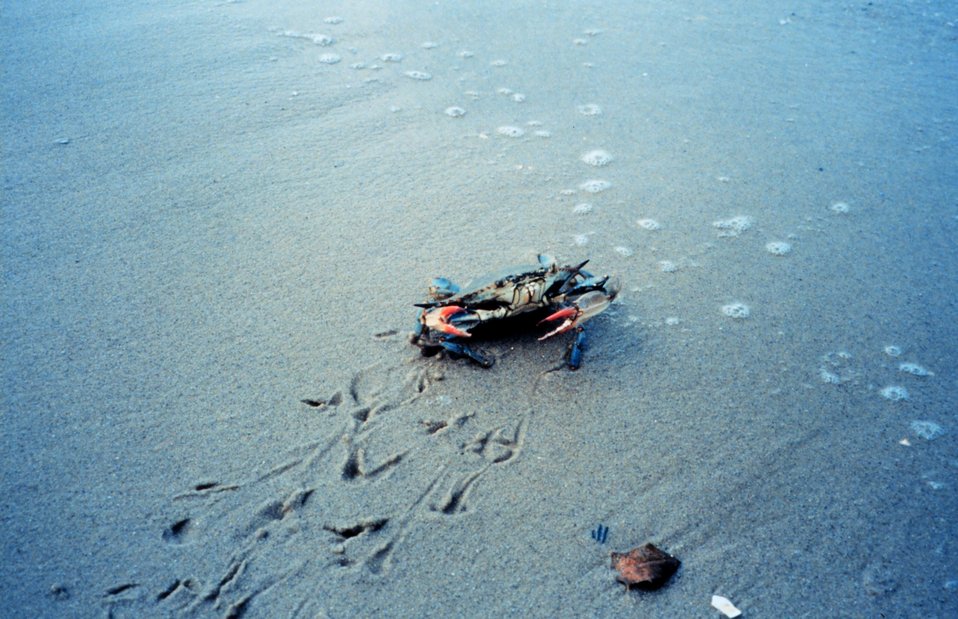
Female blue crab (Callinectes sapidus) at water's edge. Females can be distinguished by the right red tips on their claws. Note impressions in sand made by crab when ambulating.